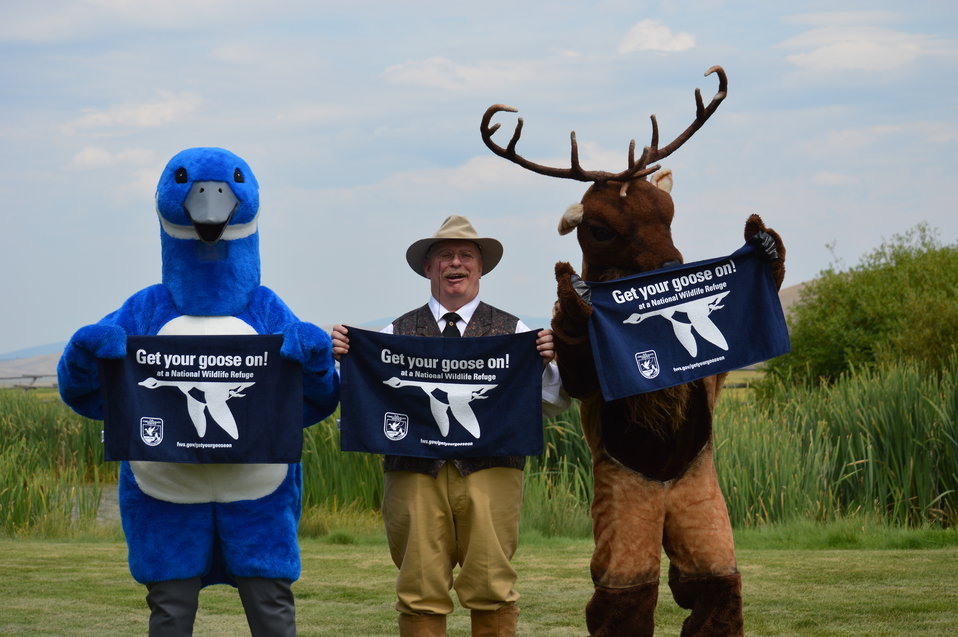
Get Your Goose On! - National Elk Refuge Style

On August 10, 2012 the U.S. Fish and Wildlife Service and Partners celebrated the 100 year anniversary of the establishment of the National Elk Refuge. In these photos, young attendees, along with Puddles the Blue Goose and the National Elk Refuge's mascot, showed us how to Get Your Goose On! with style.